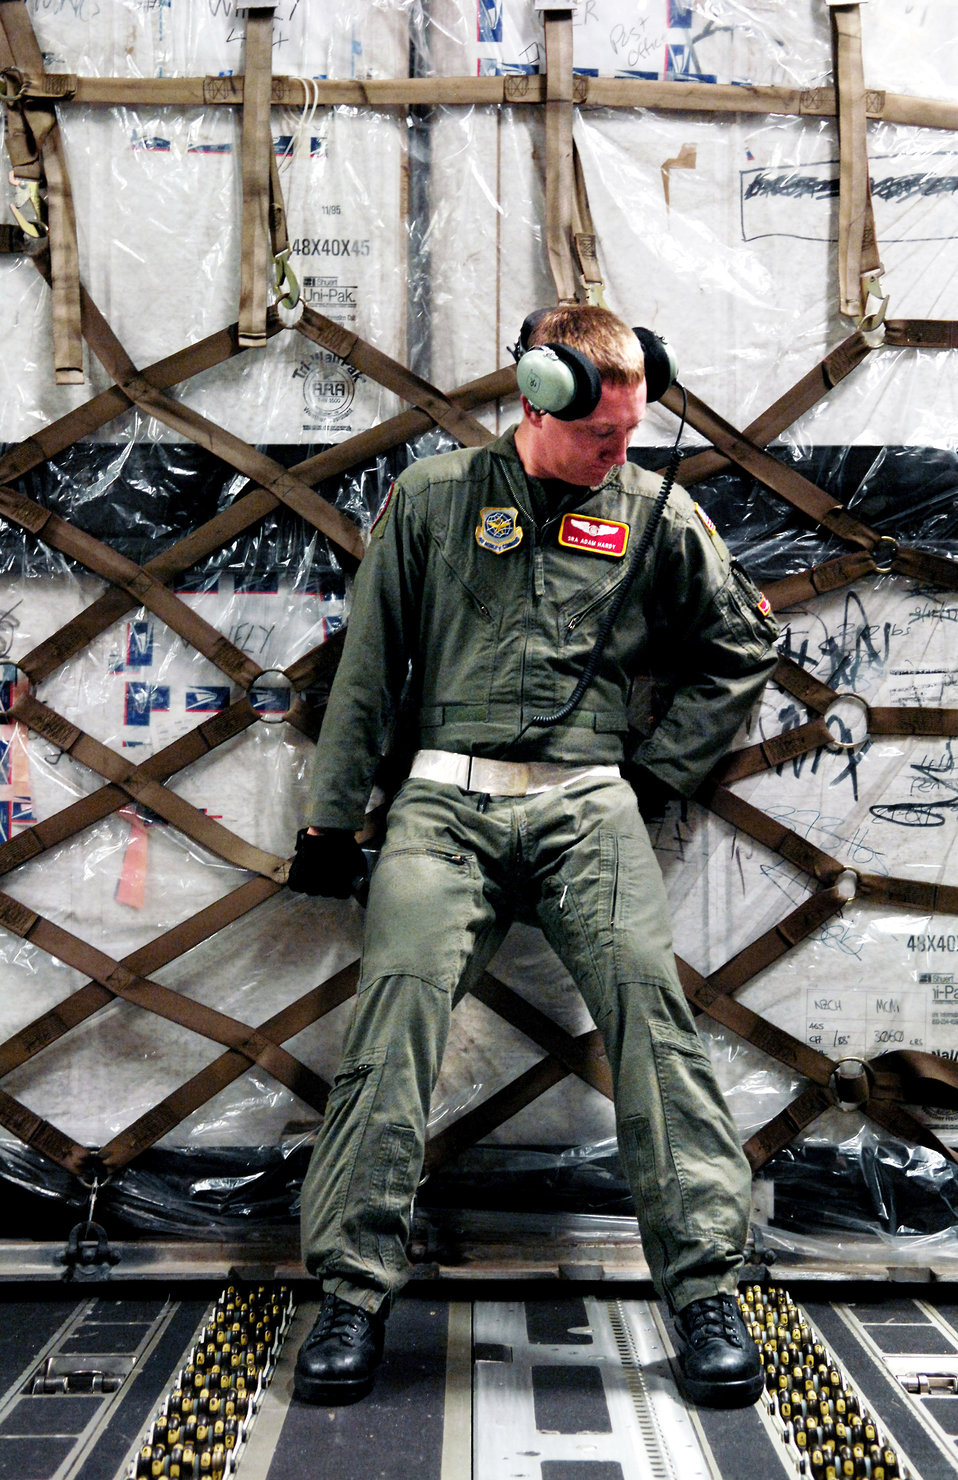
Winter flights to Antarctica wrap up

Senior Airman Adam Hardy pushes a pallet into place on a C-17 Globemaster III during Operation Deep Freeze Aug. 25 at Christchurch, New Zealand. A C-17 and 31 Airmen from McChord Air Force Base, Wash. conducted the annual winter fly-in augmentation of scientists, support staff, food and equipment for the U.S. Antarctic Program at McMurdo Station, Antarctica.